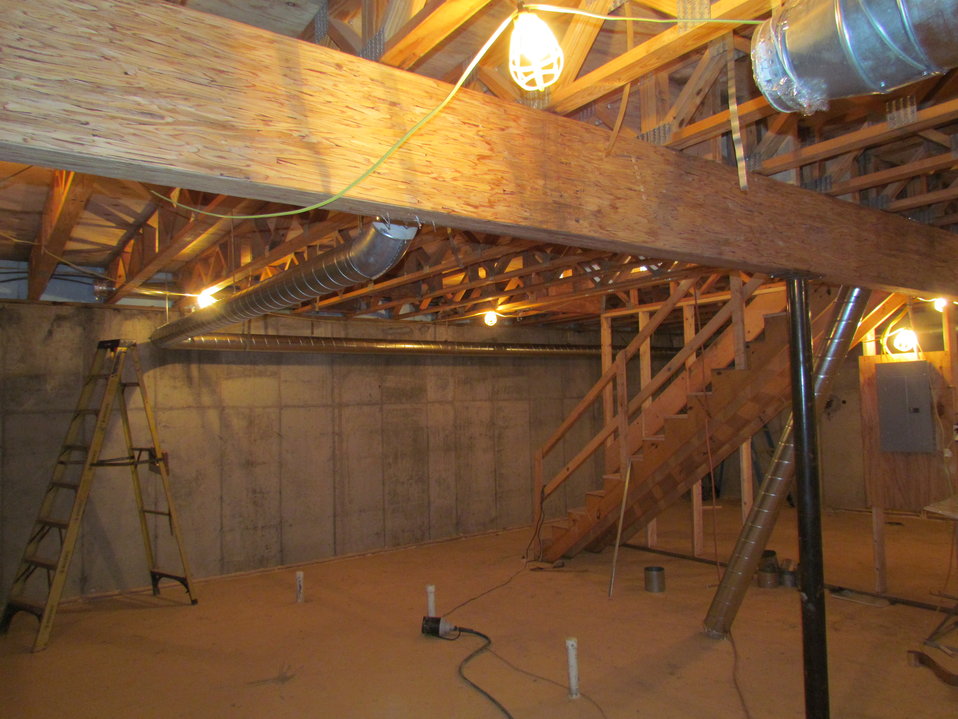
Net-Zero Energy Residential Test Facility - Photo showing duct work being installed in facility. Large laminated beam supporting the floor trusses takes the place of a steel beam often used for this purpose. Looking towards the front (south) of facility.